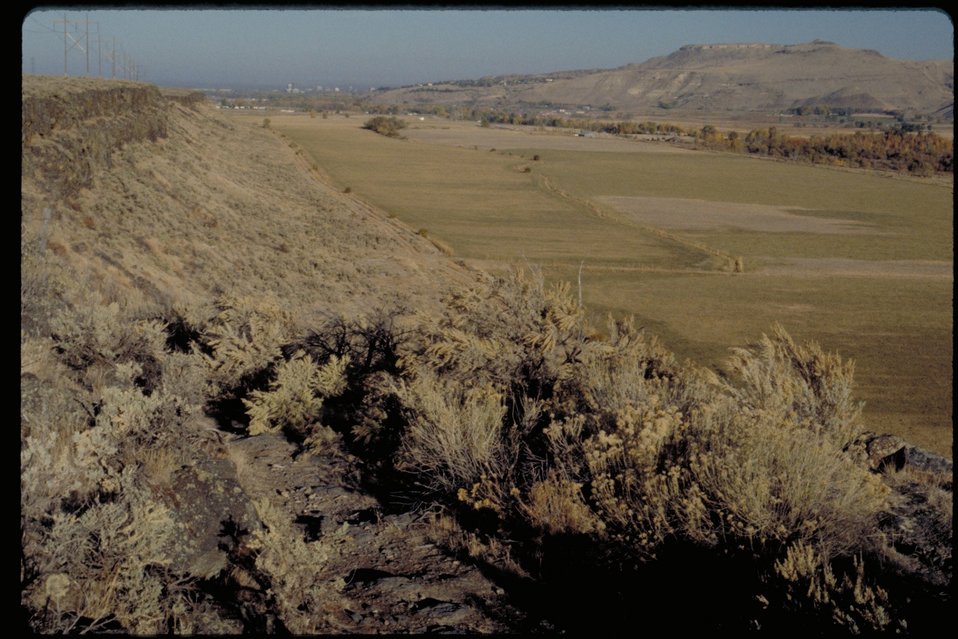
Oregon Trail South of Boise Lower Snake River District